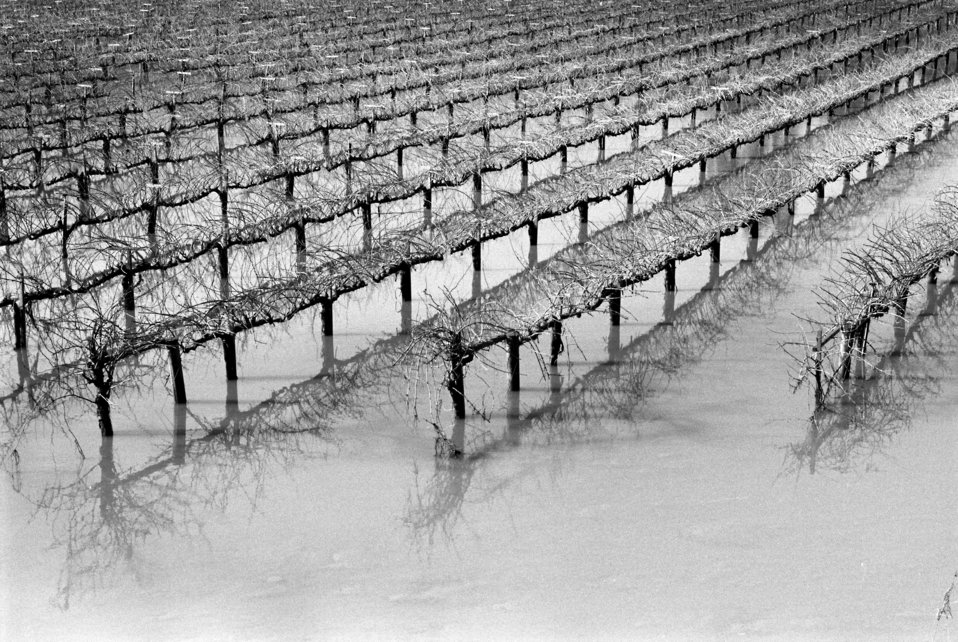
Farms were flooded in the Sacramento River Basin on January 13, 1995. The storm drainage system of the Sacramento River Basin failed, which resulted in extensive flooding of the region.